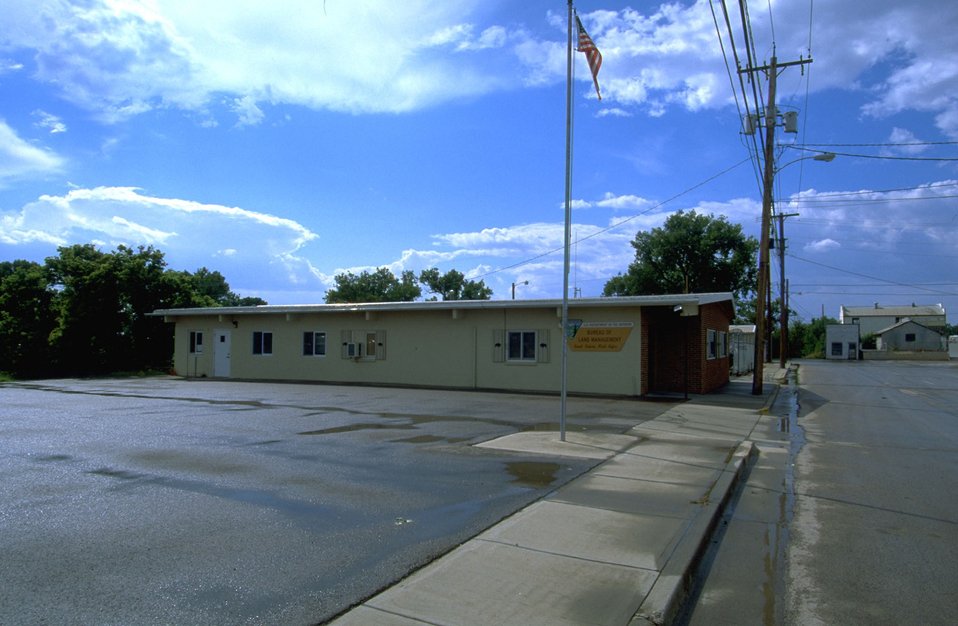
South Dakota Field Office looking west